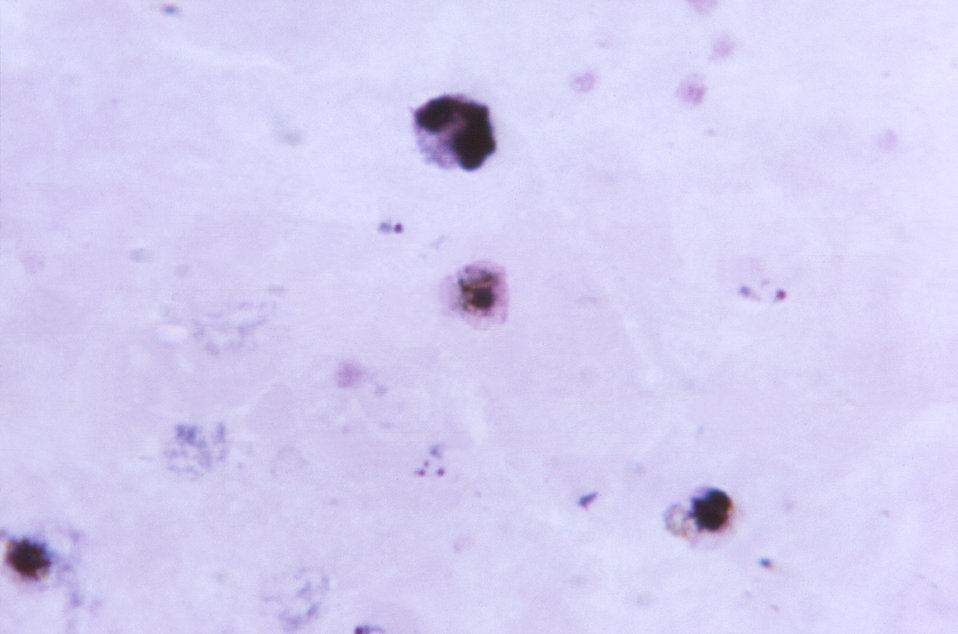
Magnified 1125X, this thick film photomicrograph revealed a Plasmodium vivax gametocyte, reddish in color, and displaying virtually no visible cytoplasm. The protozoa P. vivax is a member of the genus Plasmodium, and along with its co-members, is responsible for causing the disease malaria.